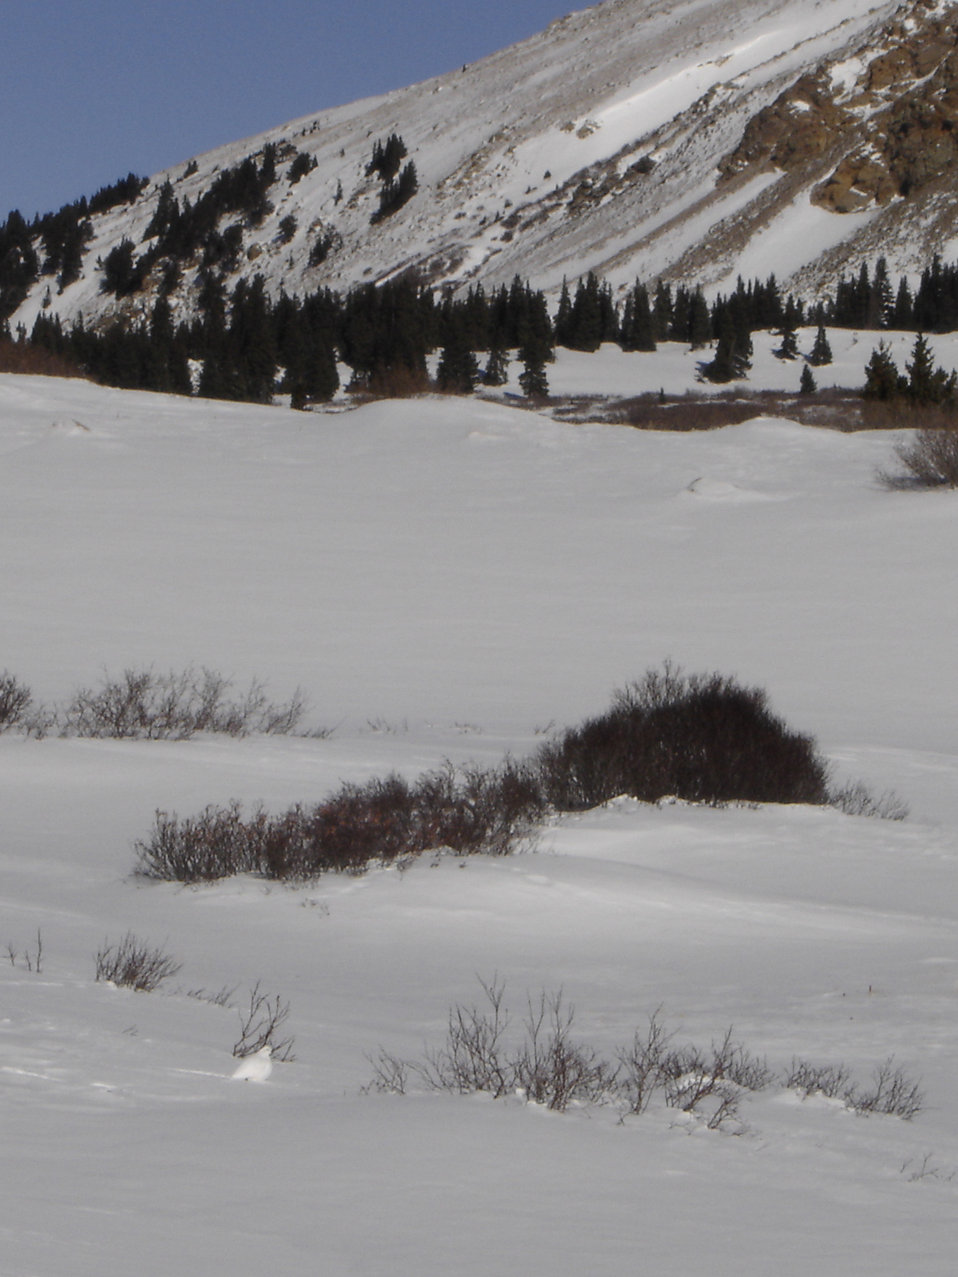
Lone White-tailed Ptarmigan

Male and female white-tailed ptarmigan share similar body size, shape, and winter plumage, with adult body lengths up to 13.4 inches (34 centimeters) and body masses up to 0.9 pound (425 grams). Both the southern and Mt. Rainier white-tailed ptarmigan are white in winter and brown in summer, the feathers changing color with the seasons to camouflage the birds. Although the body feathers change color, the white-tailed ptarmigan is named for its perpetually white tail feathers, a morphological trait that distinguishes it from other ptarmigan species. During the winter, males and females are stark white and difficult to distinguish from the background of snow. In the summer during the breeding season, males turn a lighter color of brown or gray than females and develop a dark band of feathers on the breast that resembles a necklace.

During the winter, the southern and Mt. Rainier white-tailed ptarmigan feed on exposed willows above the snow and dig roosts, or burrows, into the soft snow as protection from wind and weather. During the summer, the white-tailed ptarmigan feeds on willows and other alpine vegetation. White-tailed ptarmigan require cool temperatures, rocky areas, soft snow, and the presence of willows. The southern and Mt. Rainier white-tailed ptarmigan spend their entire lifecycles in alpine habitats and are well adapted to survive in the cold, arid, and open alpine environments. Adaptations of the white-tailed ptarmigan to these alpine environments include its cryptic plumage, low metabolic rates, and heavily feathered feet that act as snowshoes.